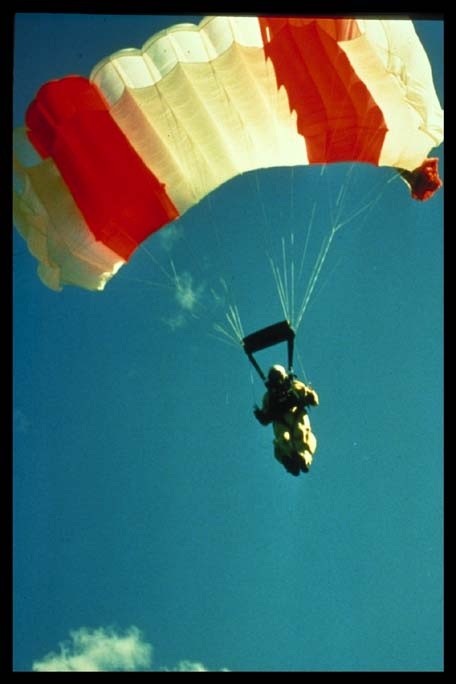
Smokejumper